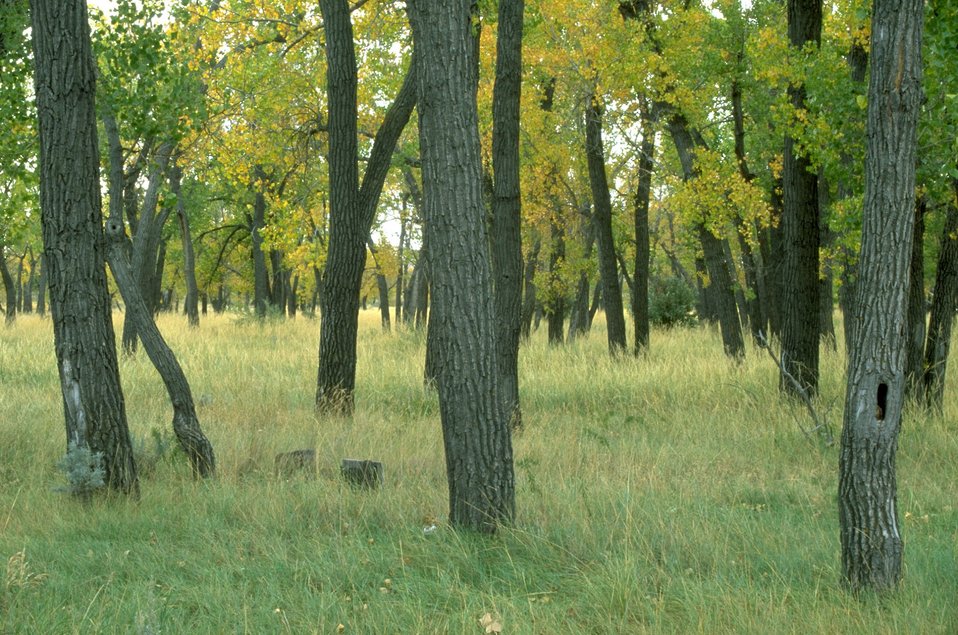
Cottonwood trees at the confluence of the Yellowstone and Powder Rivers